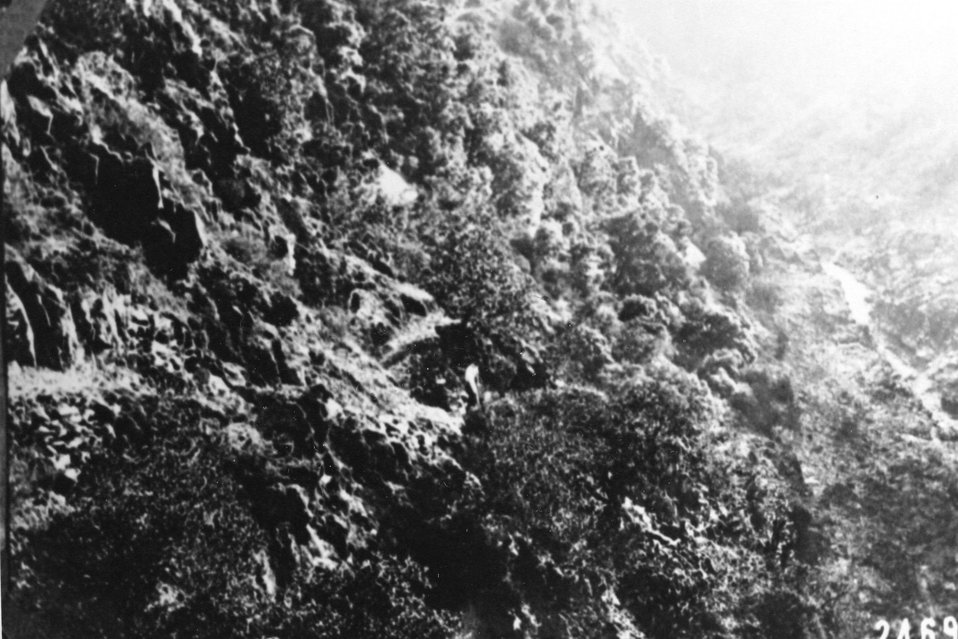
Bulding the Rogue River Trail at Devil's Back Bone.